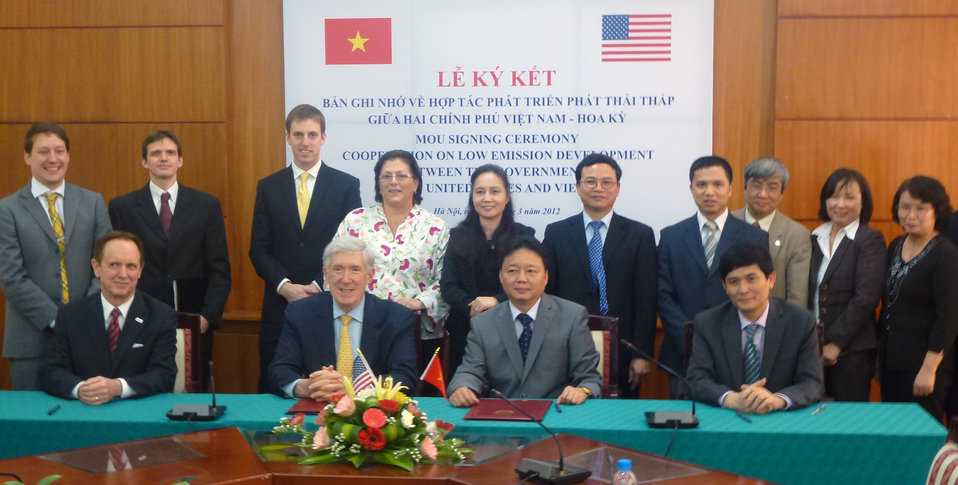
U.S.-Vietnam MOU on Low Emissions Development Strategies Signing Ceremony